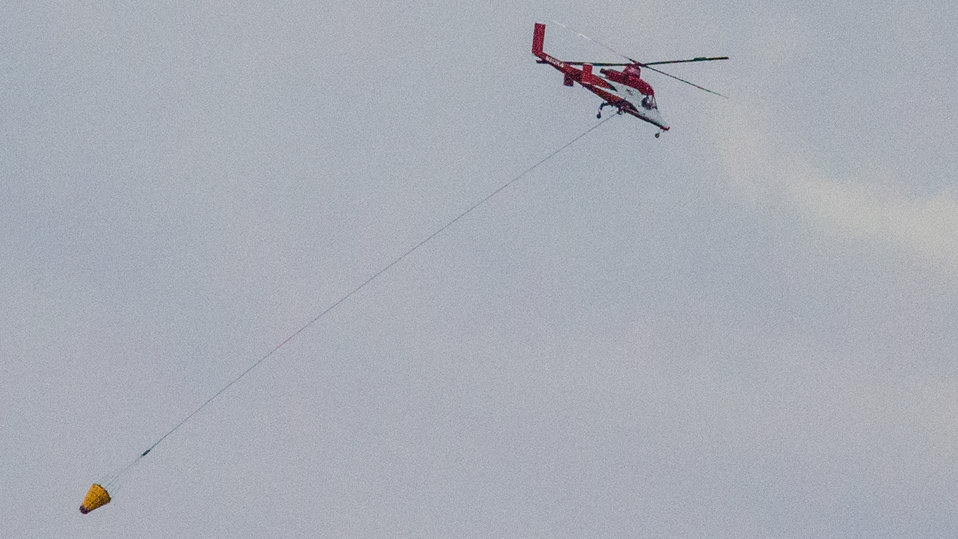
A Kaman K-MAX helicopter, with two counter-rotating intermeshing rotors (synchropter), returns to base or “dip point” to reload the flexible bucket (cabled below it) with water for an aerial drop where needed during the Big Windy Complex Wildlands Fire, 15 miles west of Interstate-5 and East Northeast of Galice, Oregon, with the Incident Command Post (ICP) in Merlin, OR on Thursday, Aug 8, 2013. This type of helicopter is designed for lifting external loads of more than 6,000 pounds. There is no tail rotor, and its design contributes to a natural hover characteristic. Reloading the bucket with water does not require the aircraft to land, saving time and fuel.